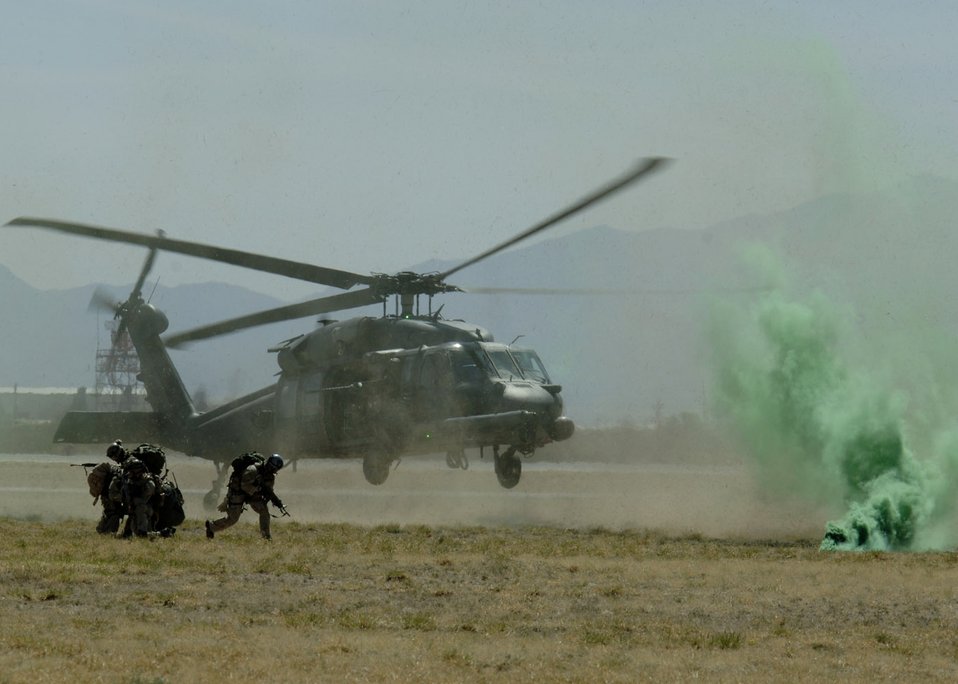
Air show features '80 Years of Airpower for America'

Pararescuemen from the 48th Rescue Squadron prepare to be picked up by an HH-60 Pave Hawk helicopter as part of a combat search and rescue demonstration March 18 during the 2007 Aerospace and Arizona Days air show at Davis-Monthan Air Force Base, Ariz. The two-day air show offered public an up-close look at military and civilian aerial demonstrations and static-display aircraft from across the U.S. The theme for this year's show was